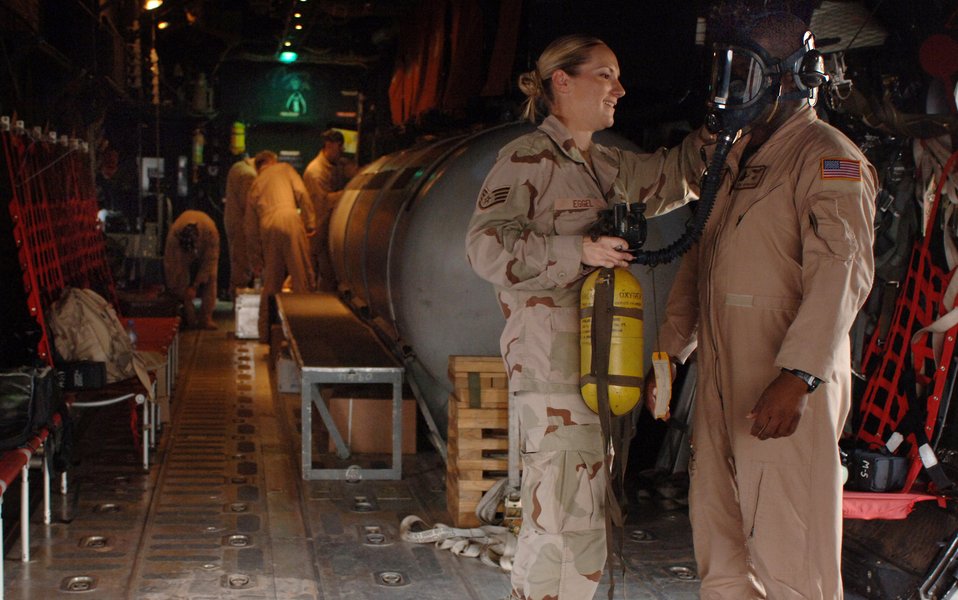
Serving through the season: Staff Sgt. Elizabeth Eggel

Staff Sergeant Elizabeth Eggel fits an emergency breathing device for C-130 Hercules loadmaster Tech. Sgt. Antonio Davis before a refueling mission Dec 17. As the only life support technician deployed to the Horn of Africa, the six-year veteran from Davis-Monthan Air Force Base, Ariz., provides support to more than 40 Air Force, Navy and Marine aircrew members based at Camp Lemonier, Djibouti.